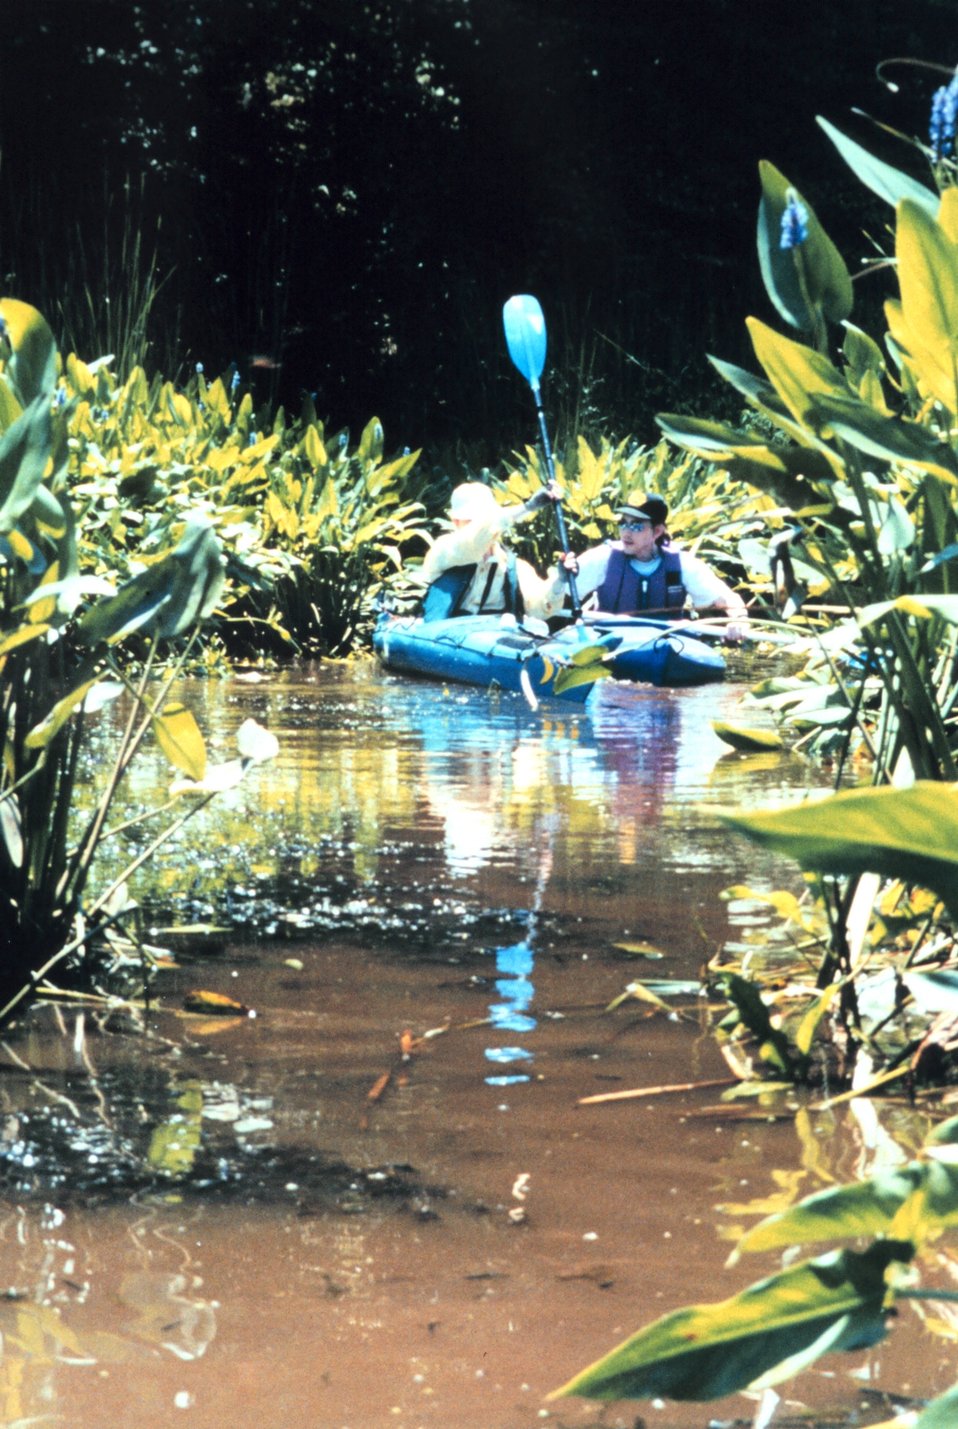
National Oceanographic Data Center employees up a creek - kayaking along the Patuxent River.